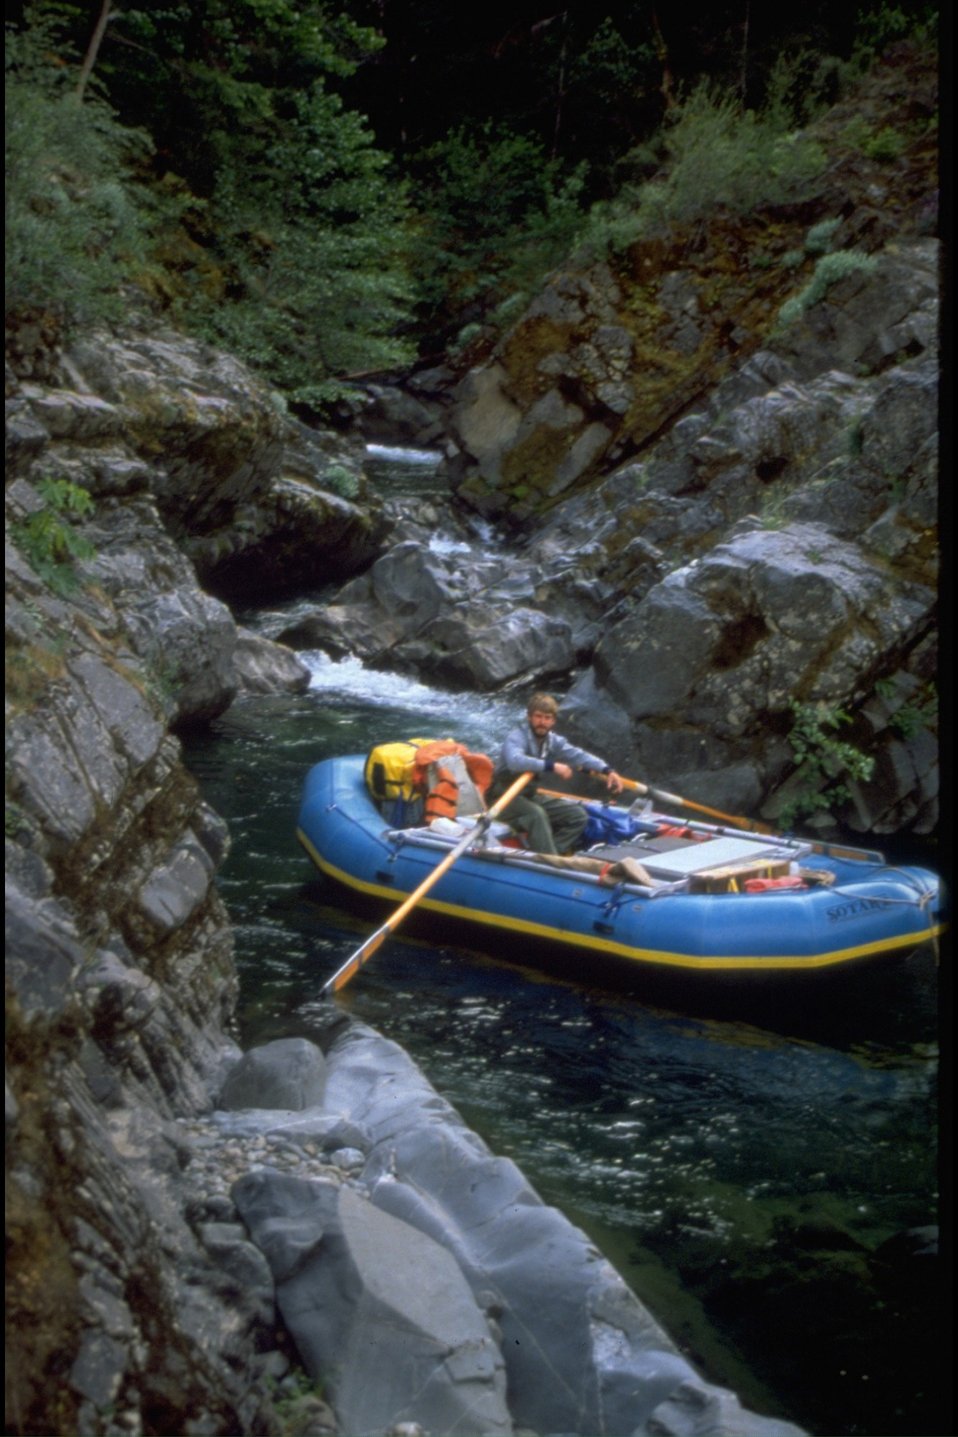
Rafting at Big Windy Creek (8,000 cfs).